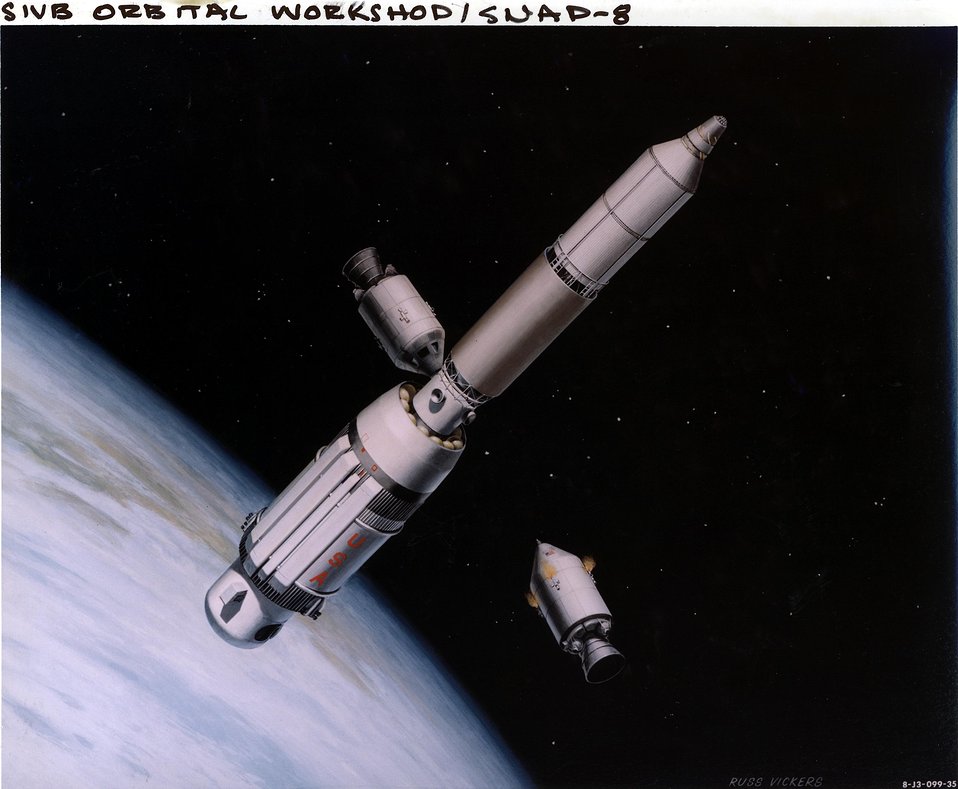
SIVB orbital workshop/ SNAP 8